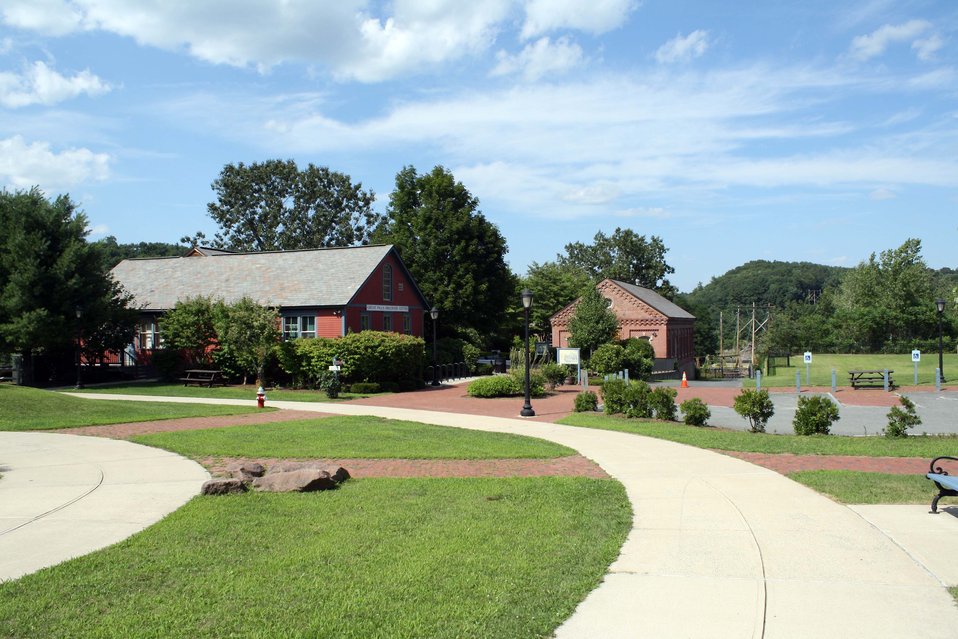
Great Falls Discovery Center

Turners Falls, Massachusetts.